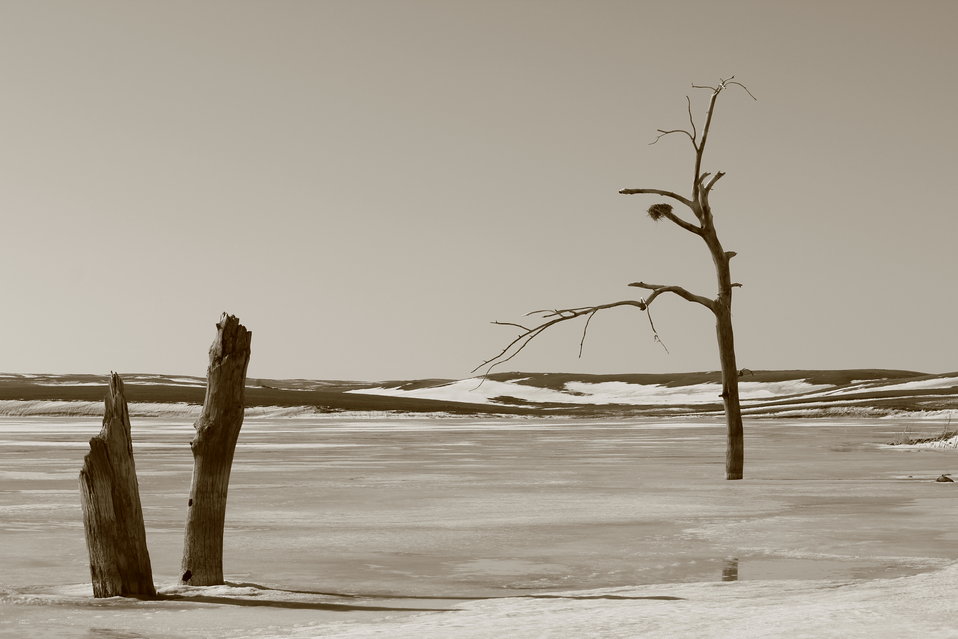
Cormorant Nest

These twig and stick nests persist through the winter until the cormorant's return in the spring. This nest is adjacent to the Klein WPA of the Kulm Wetland Management District in McIntosh County, North Dakota.